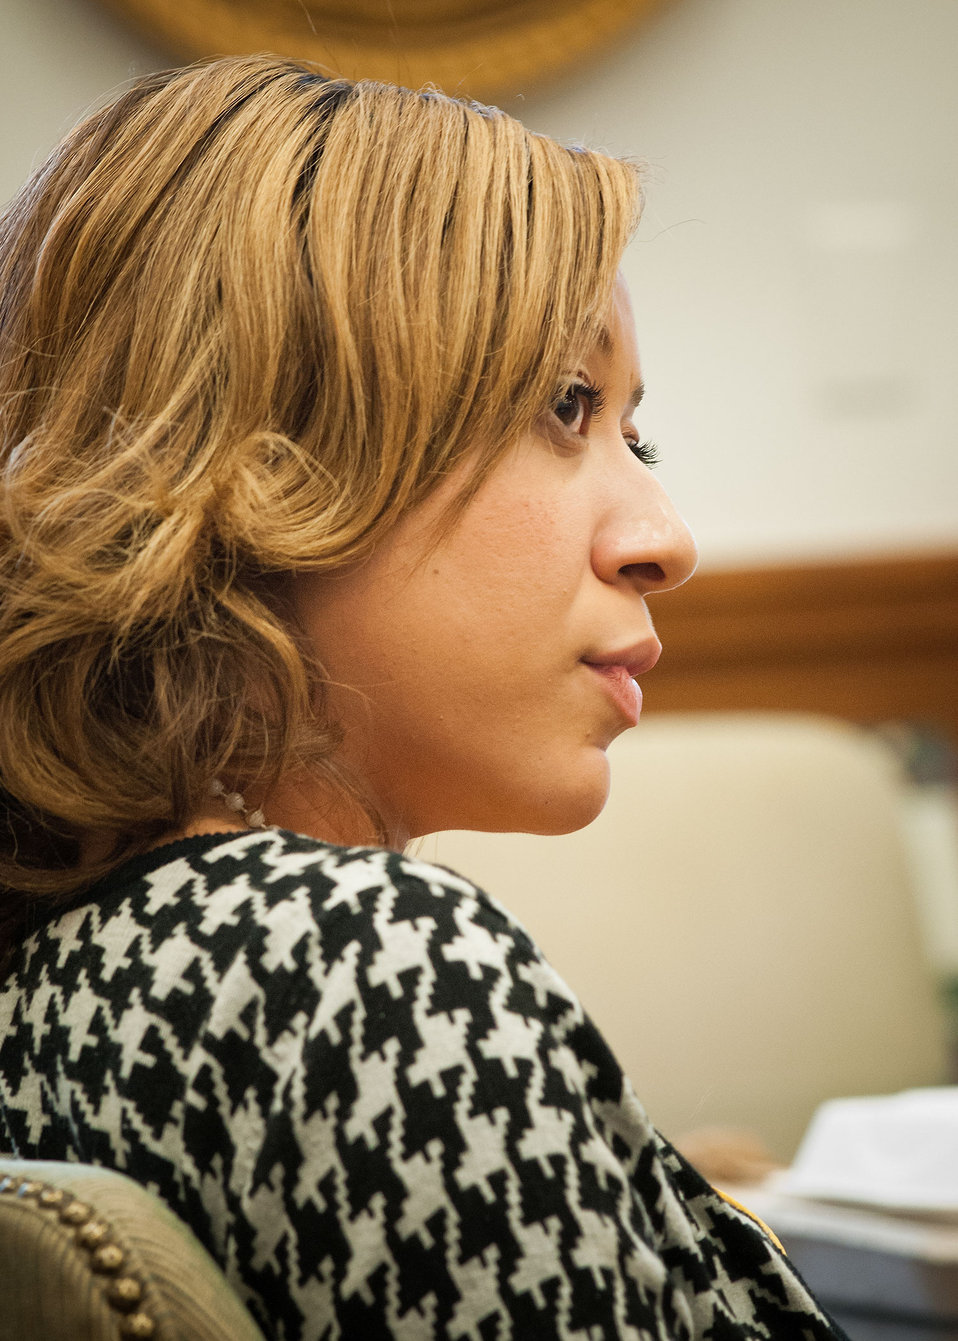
U.S. Department of Agriculture (USDA) Agriculture Research Service (ARS) Program Analyst Tracy Troutman had the opportunity with other USDA employees to discuss the roles they play within the Department at a Brown Bag Lunch held with Agriculture Secretary Tom Vilsack in Washington, D.C. on Wednesday, Sept. 26, 2012. Secretary Vilsack holds the occasional Brown Bag Lunches to gain information and knowledge to assist in the administration of the affairs and programs of the Department, and to thank the employees for their diligent work to the Department and as public servants.